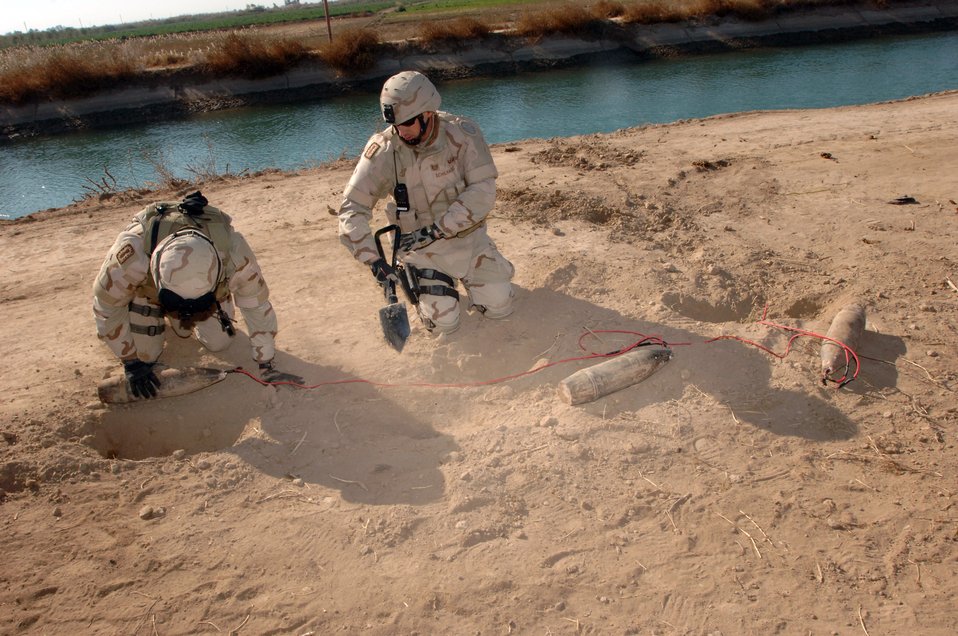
Operation Iraqi Freedom

SHAKARIA, Iraq (AFPN) -- Capt. Joshua Tyler (left) and Tech. Sgt. Brian Schilhabel secure an improvised explosive device. The IED was found along a road during a search of the area near a village here. The device had a bar-pressure plate linked to three 122 mm artillery shells. The inspection was part of the search-and-sweep operations by Soldiers from Bravo Company, 2nd Battalion of the 502nd Infantry Regiment. Captain Tyler and Sergeant Schilhabel are with the 447th Expeditionary Civil Engineer Squadron explosive ordnance disposal flight.